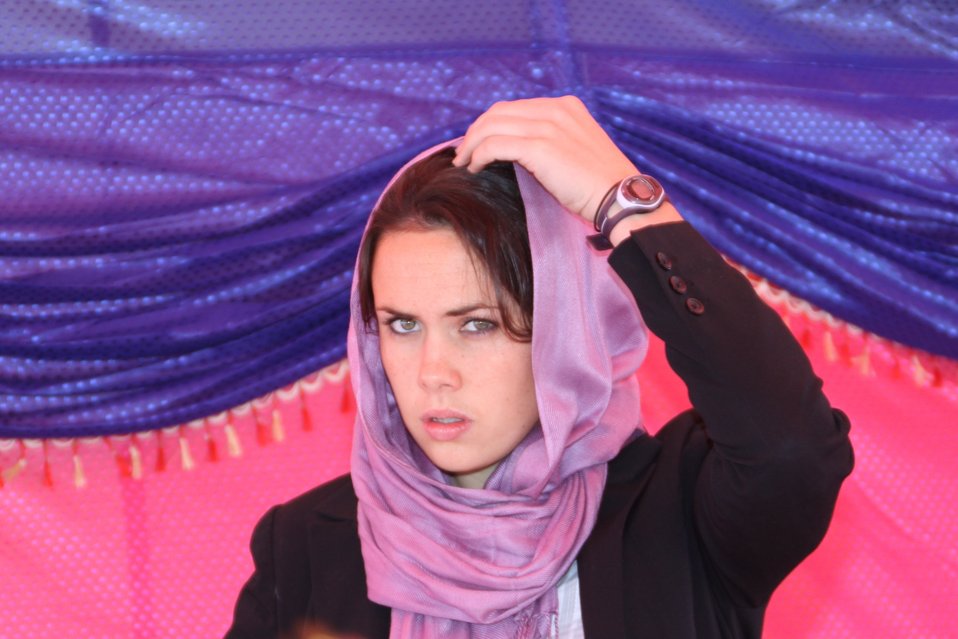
AVIPA Plus Wheat Seed Distribution 101005